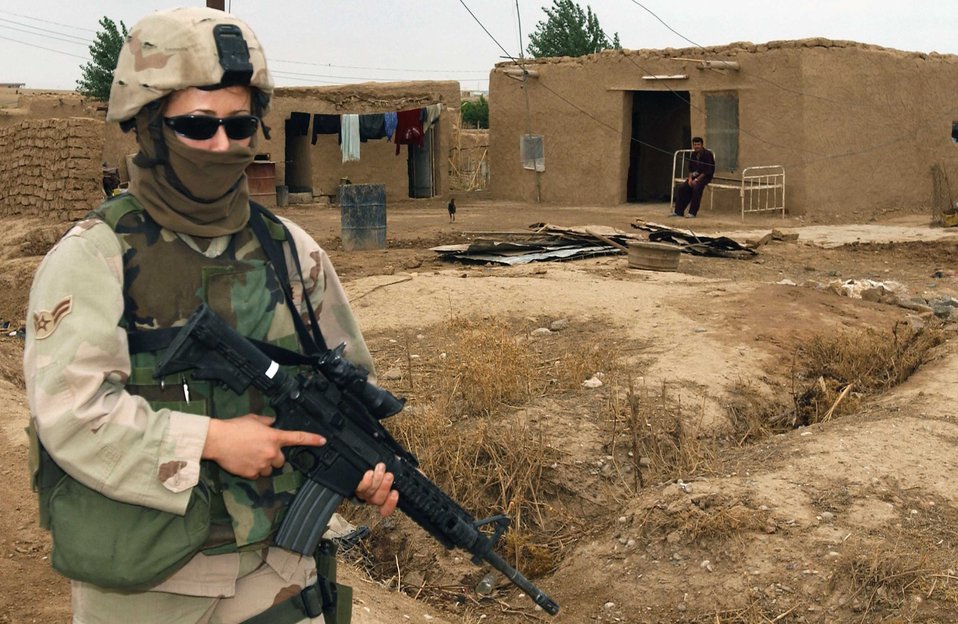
Airmen on patrol

KIRKUK AIR BASE, Iraq -- Airman 1st Class Polly-Jan Bobseine keeps a vigilant eye for suspicious activity during a patrol through a nearby Iraqi village Nov. 10. Airmen assigned to the 506th Expeditionary Security Forces Squadron are responsible for securing Air Force assets on Kirkuk Air Base. Airman Bobseine is deployed from the 823rd Security Forces Squadron at Moody Air Force Base, Ga.